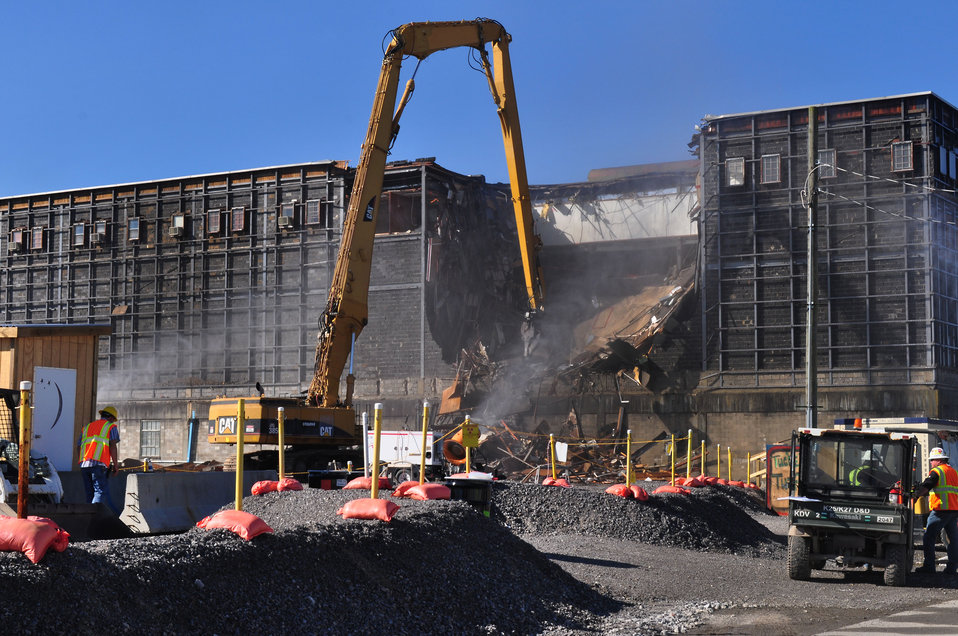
9

K-25 North Tower